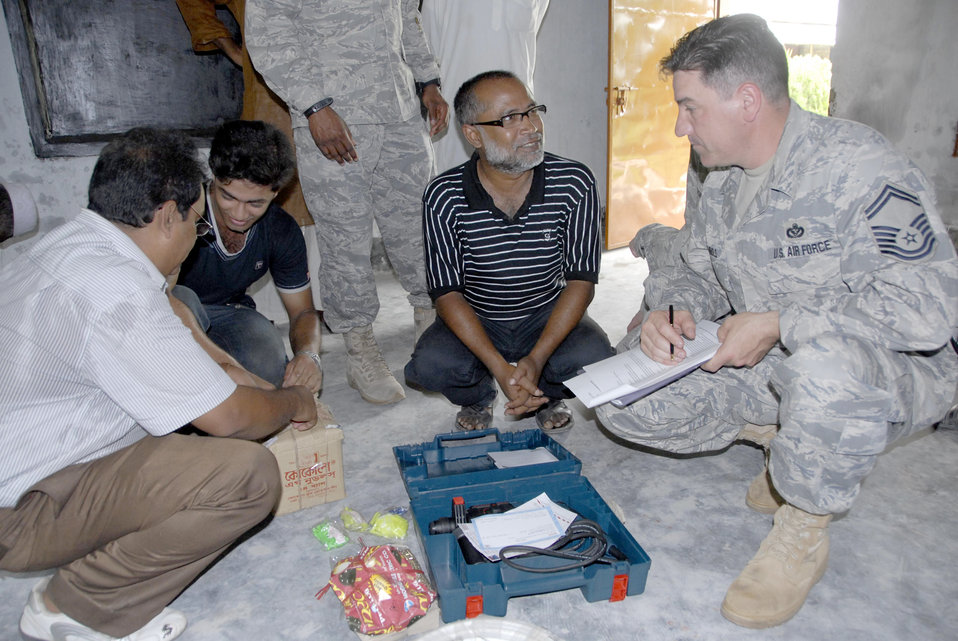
Pacific Angel

Senior Master Sgt. Terry Rembold (right) discusses engineering plans with a Bangladeshi construction contractor June 9, 2010, in preparation for the kick-off of Pacific Angel in Bangladesh scheduled to take place June 12 through 16, 2010. Operation Pacific Angel is a joint and combined humanitarian assistance operation conducted in the Pacific area of responsibility to support U.S. Pacific Command's capacity-building efforts. Sergeant Rembold is a civil engineer from the 354th Civil Engineer Squadron at Eielson Air Force Base, Alaska.